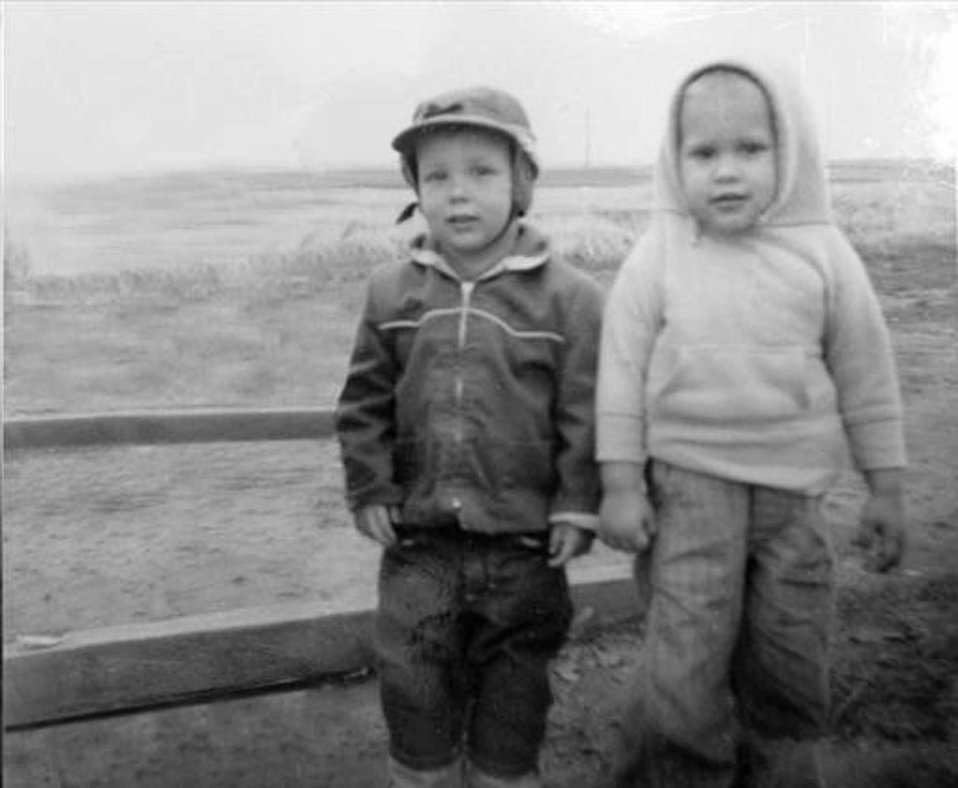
From one sandbox to another

Jeffrey Dunn (left) and Brian Bishop pose next to the sandbox they played in at Mather Air Force Base, Calif., in the spring of 1963.